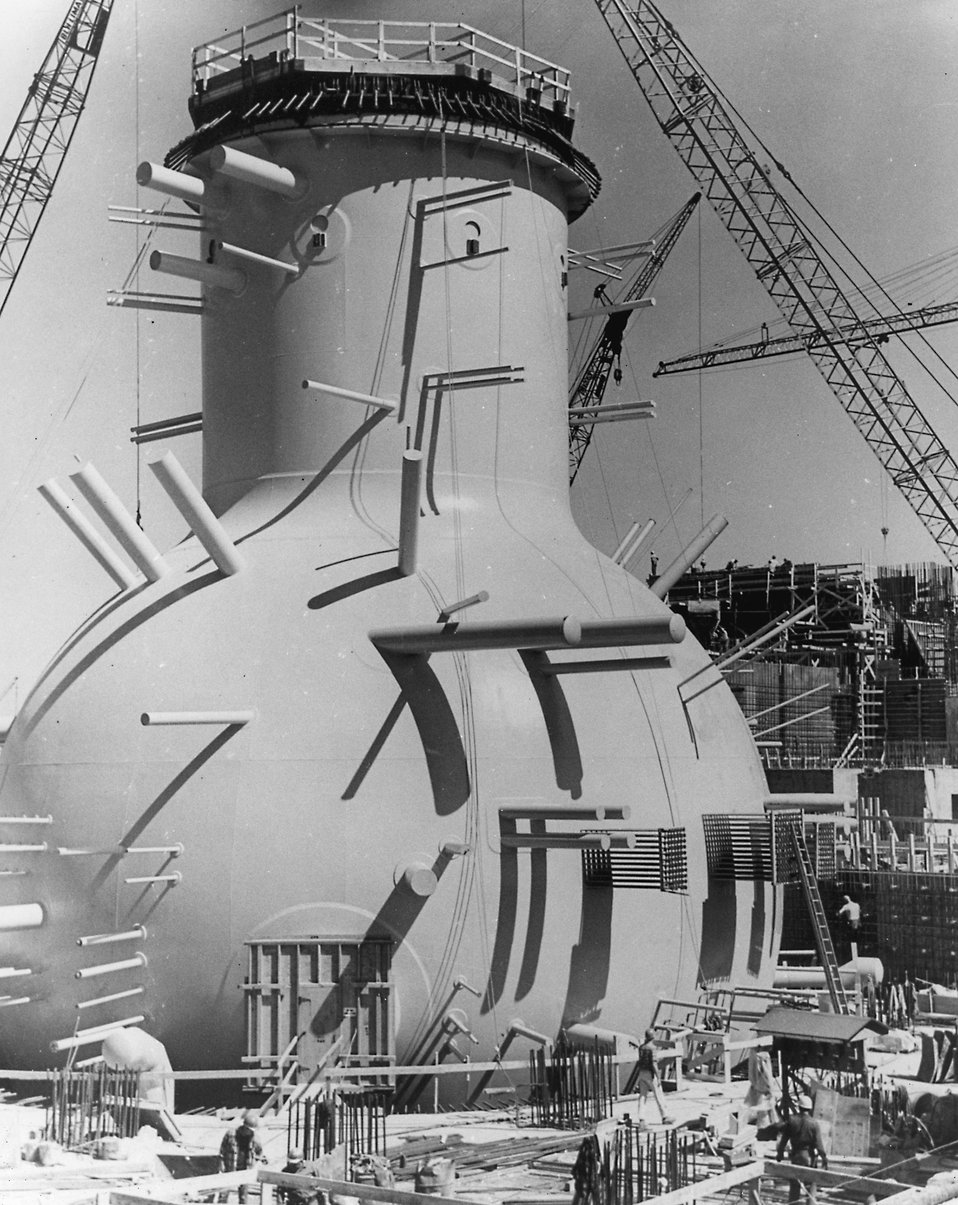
This pressure vessel is a part of the Nine Mile Point Nuclear Power Plant under construction six miles east of Oswego, New York. The 130-foot vessel will house the reactor, which is being built by General Electric for the Niagara Mohawk Power Corporation. Circa 1966.